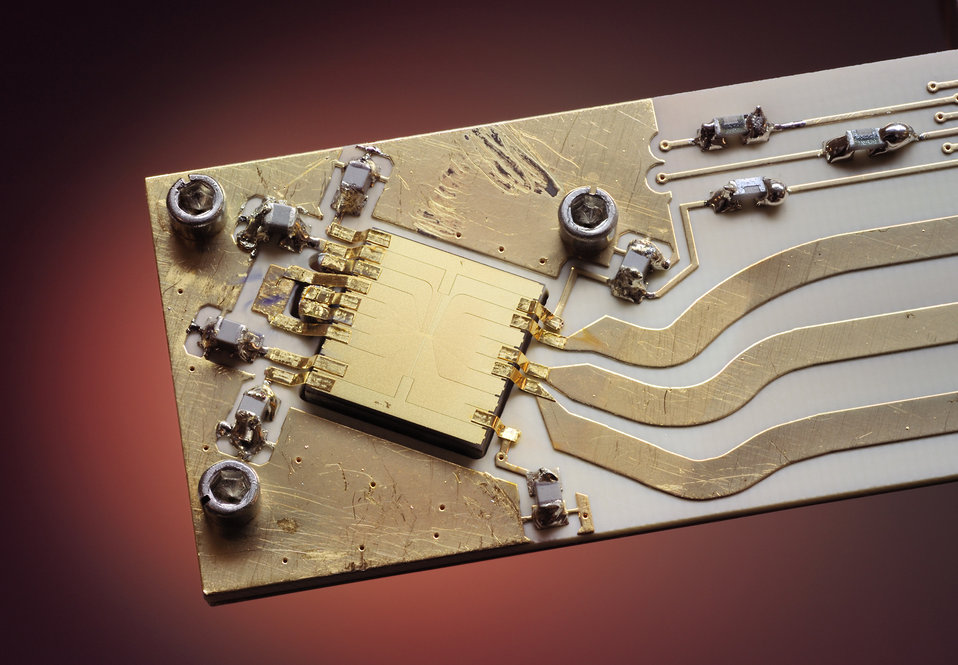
Gold ion trap on aluminum nitride backing. In NIST microwave quantum computing experiments, two ions hover above the middle of the square gold trap, which measures 7.4 millimeters on a side. Scientists manipulate and entangle the ions using microwaves fed into wires on the trap from the three thick electrodes at the lower right.